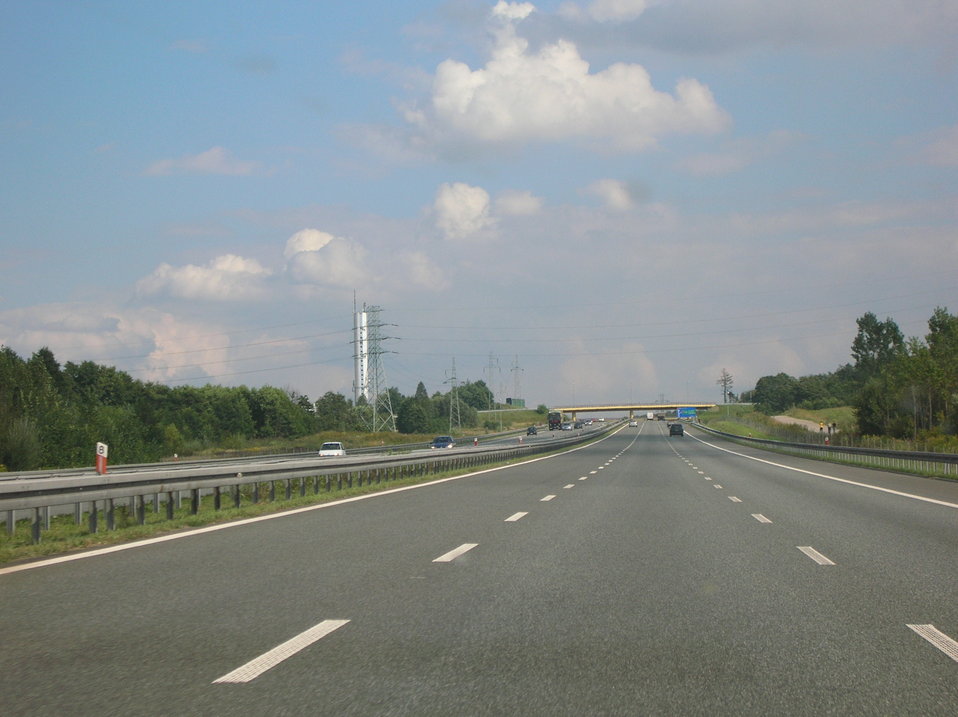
A4-01